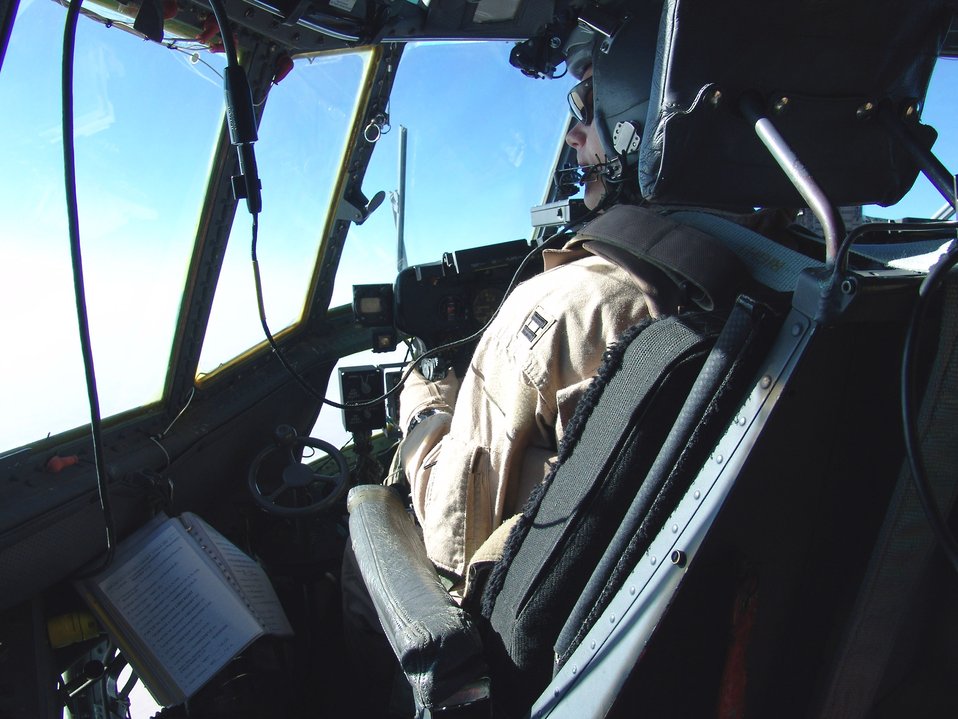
Record-breaking numbers ensure 'boots on the ground'

SOUTHWEST ASIA -- Capt. Todd Linton scans the ground for threats during a flight Sept. 12. He is a C-130 Hercules pilot for the 746th Expeditionary Airlift Squadron and is deployed from Ramstein Air Base, Germany.